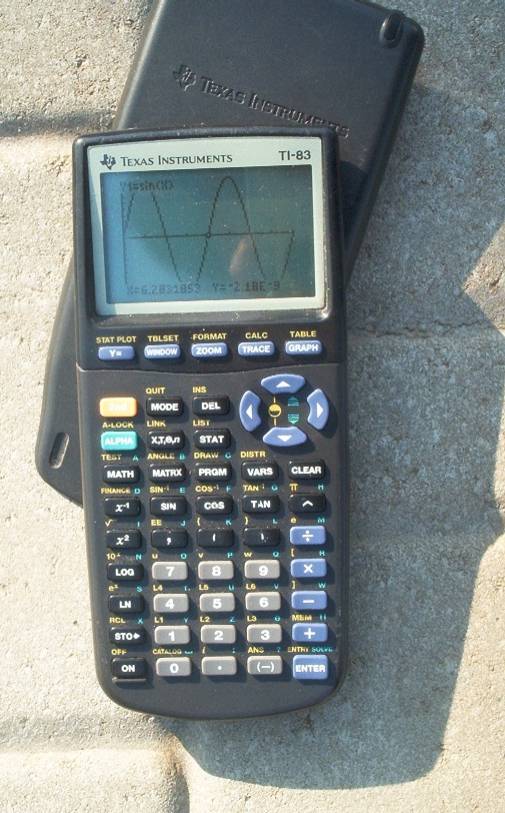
Fran√ßais†: Description: Photographie d'une calculatrice TI-83
Auteur: Philippe Aubertin (Sarex)
License: Domaine public
Image cr√©√©e pour le Wikip√©dia francophone